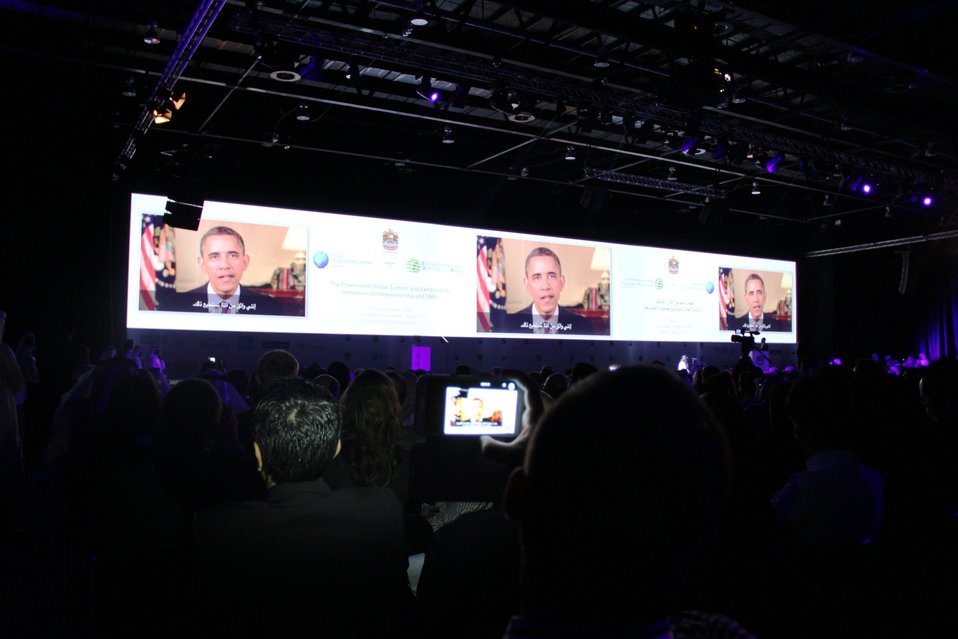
President Obama’s Video Message Is Played

President Barack Obama’s video message is played at the Global Entrepreneurship Summit (GES) in Dubai, United Arab Emirates, December 11, 2012.